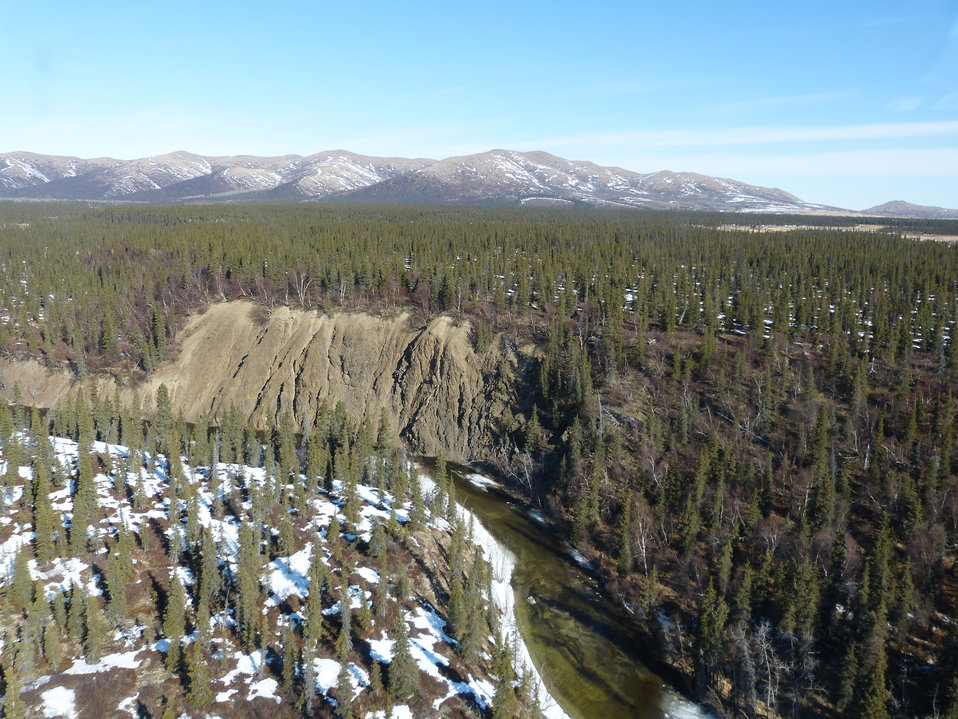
Kilbuck Mountains May2013 KSowl

Cliff-nesting raptor survey, Kilbuck Mountains, Yukon Delta National Wildlife Refuge

Photo credit: Kristine Sowl,
USFWS, YDNWR